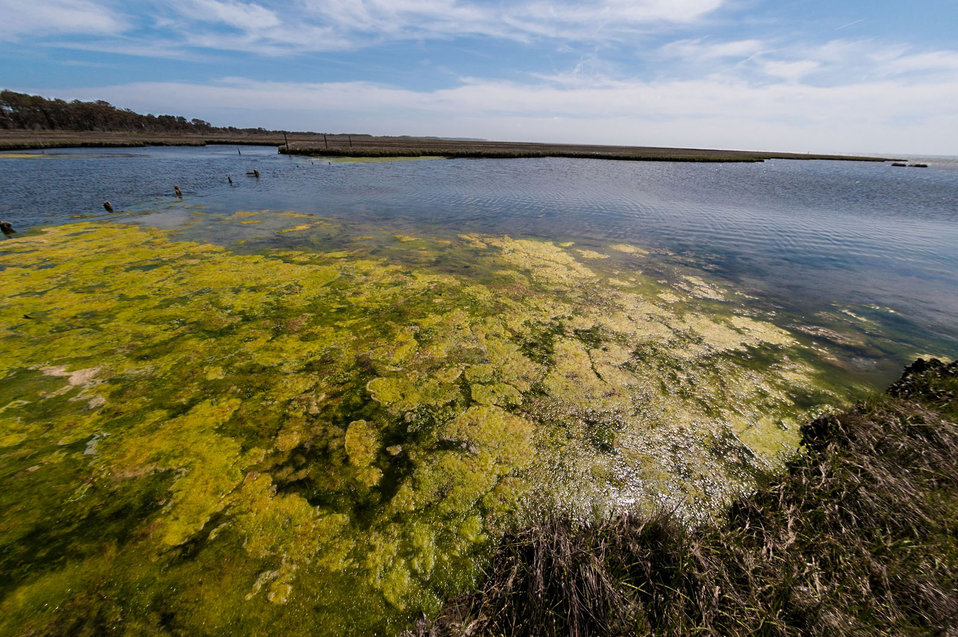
July 12, 2013 - Assateague Island National Seashore, Maryland

Nutrient pollution effects the economy by impacting tourism, property values, commercial fishing, recreational businesses and many other sectors that depend on clean water. The tourism industry loses close to $1 billion each year, mostly through losses in fishing and boating activities, as a result of water bodies that have been affected by nutrient pollution. Waterfront properties near waters affected by nutrient pollution can be severely impacted.